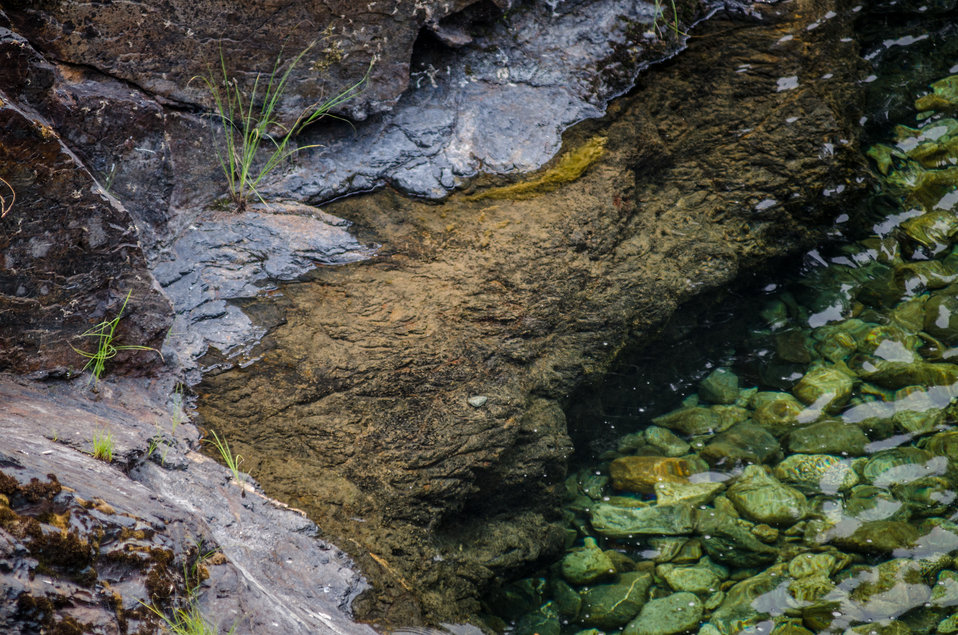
The clear waters of the North Fork Salmon River runs along the south side of Sawyers Bar (right), in Klamath National Forest, Calif., where the Salmon River Complex Wildlands Fire burns miles away to the northwest and west of Etna and Yreka, CA, on Tuesday, Aug. 6, 2013.